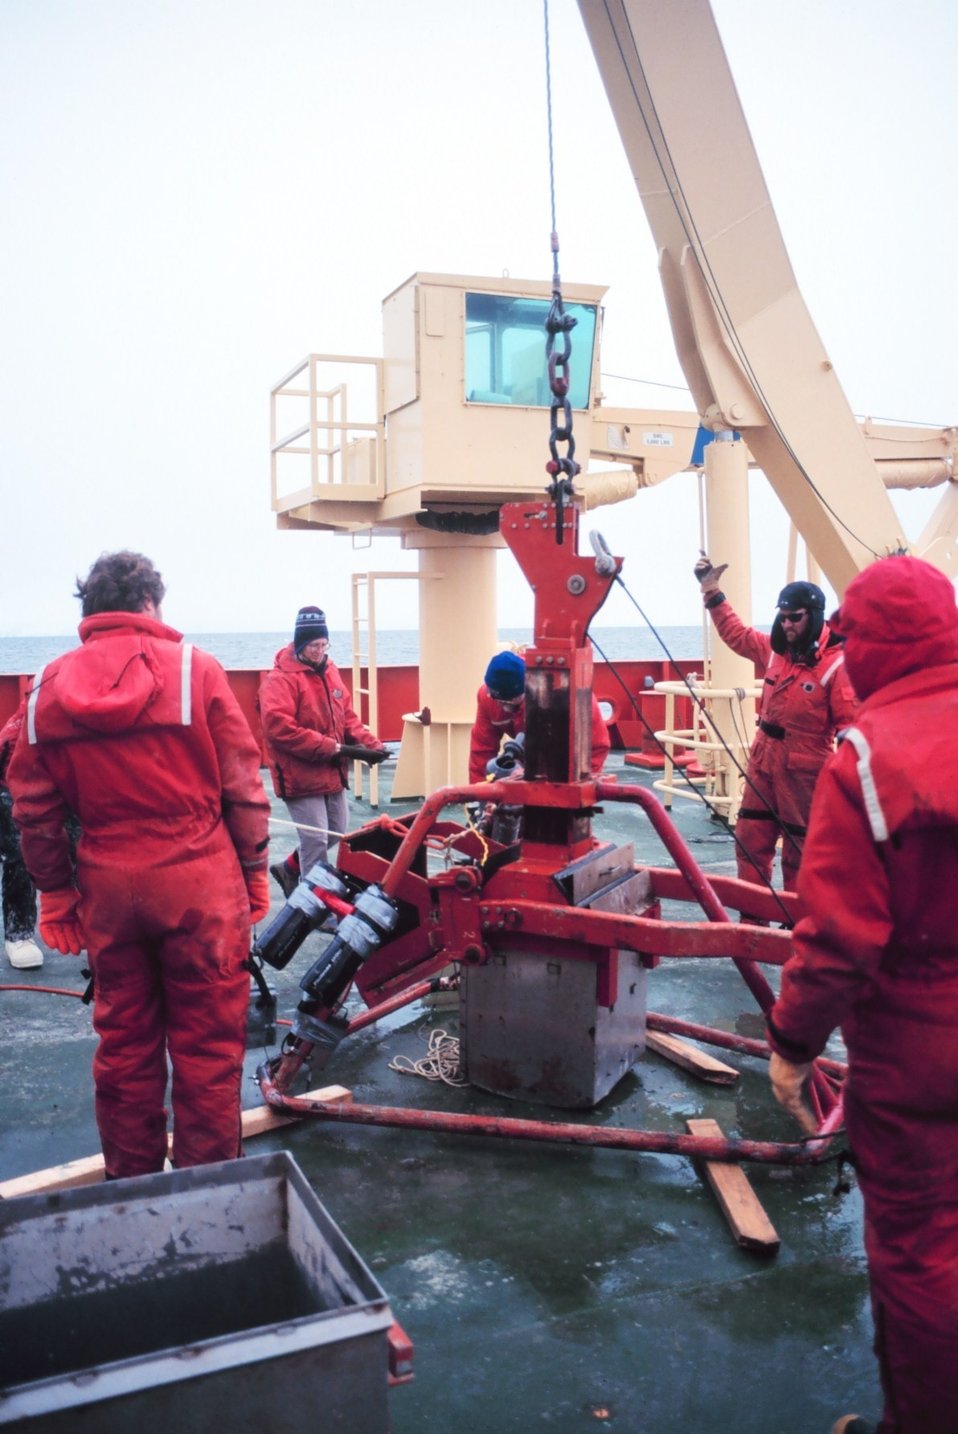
Box coring operations off the fantail of the NATHANIEL B. PALMER.